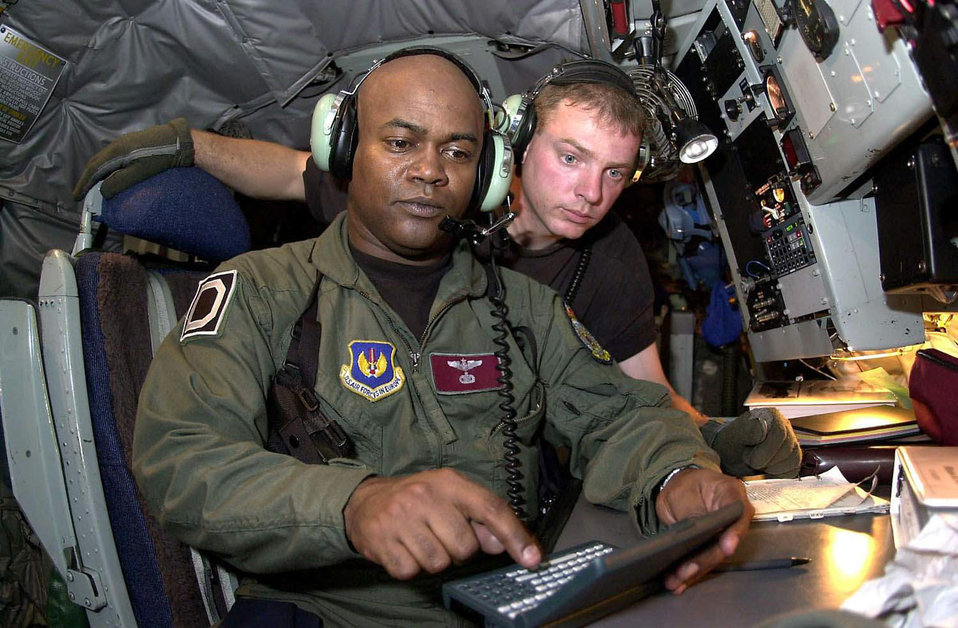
Boom Eval II

OPERATION ENDURING FREEDOM -- In preparation for takeoff, a boom operator and crew chief re-evaluate the fuel weight balance of their KC-135 air refueling aircraft. The crew refueled two C-17 Globemaster III transport planes and several escort aircraft supporting a humanitarian relief mission associated with Operation Enduring Freedom. The C-17s delivered 27,000 humanitarian daily rations for refugees in eastern Afghanistan.